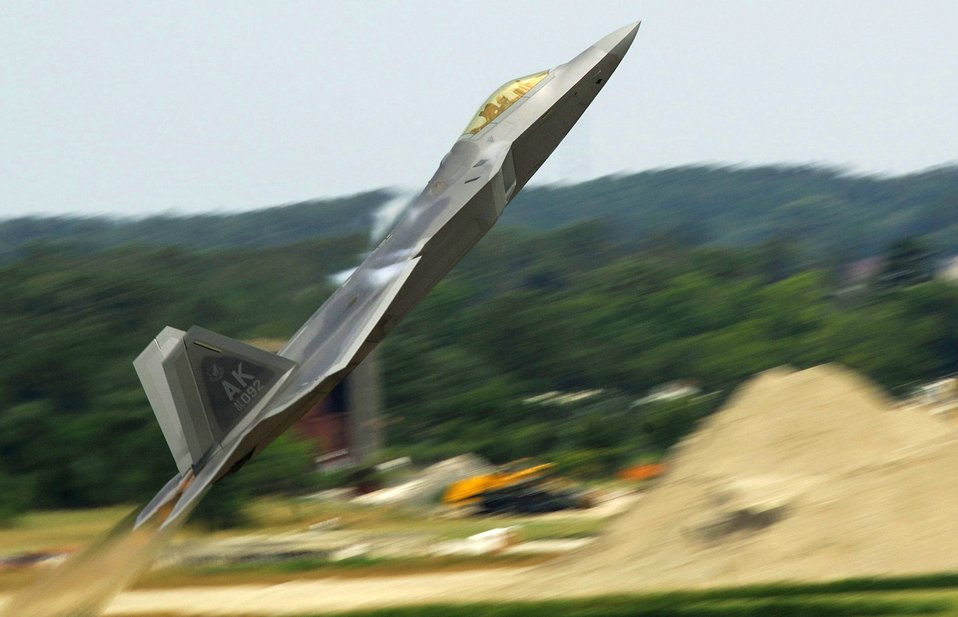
F-22A Raptor DEMO TEAM

Maj. Paul